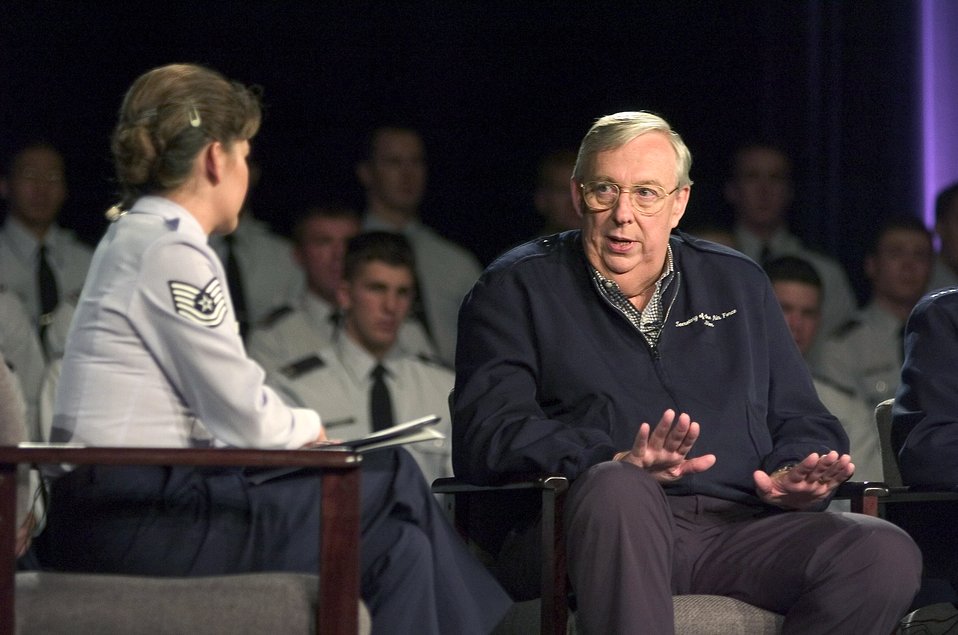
Academy town hall meeting reaches worldwide audience

U.S. AIR FORCE ACADEMY, Colo. -- Secretary of the Air Force Dr. James G. Roche answer a question from Tech. Sgt. Pachari Lutke during the town hall meeting here Sept. 27. Joining the secretary were Air Force Chief of Staff Gen. John P. Jumper and Chief Master Sgt. of the Air Force Gerald R. Murray. Sergeant Lutke is a broadcaster with Air Force News Service. The meeting was broadcast live on The Pentagon Channel and American Forces Radio and Television Service stations worldwide.